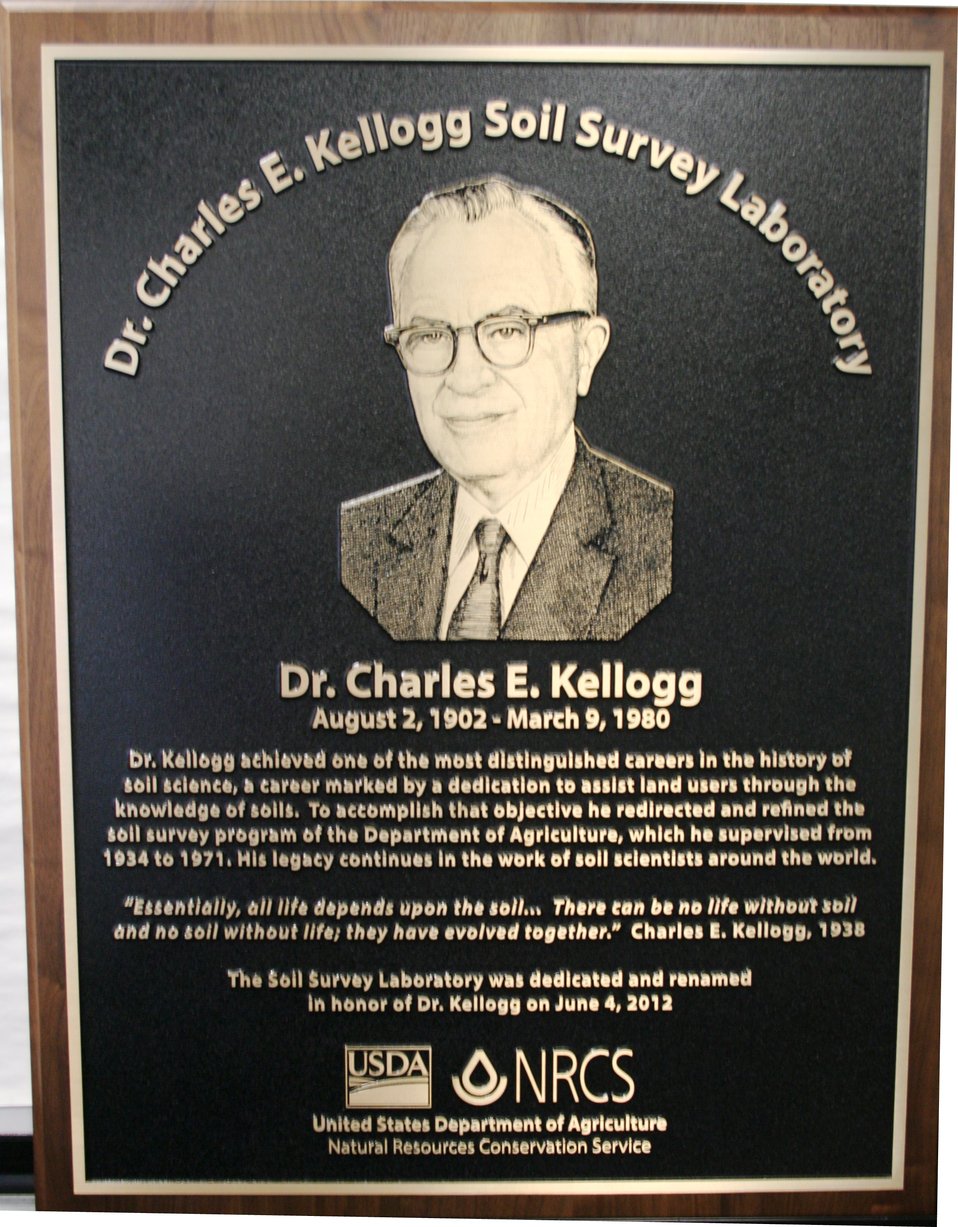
This is the plaque dedicating the new Dr. Charles E. Kellogg Soil Survey Laboratory in Lincoln, NE on June 4, 2012. The laboratory is part of the U.S. Department of Agriculture’s (USDA) Natural Resource Conservation Service (NRCS) National Soil Survey Center and serves as the primary source for the Nation’s soil information.